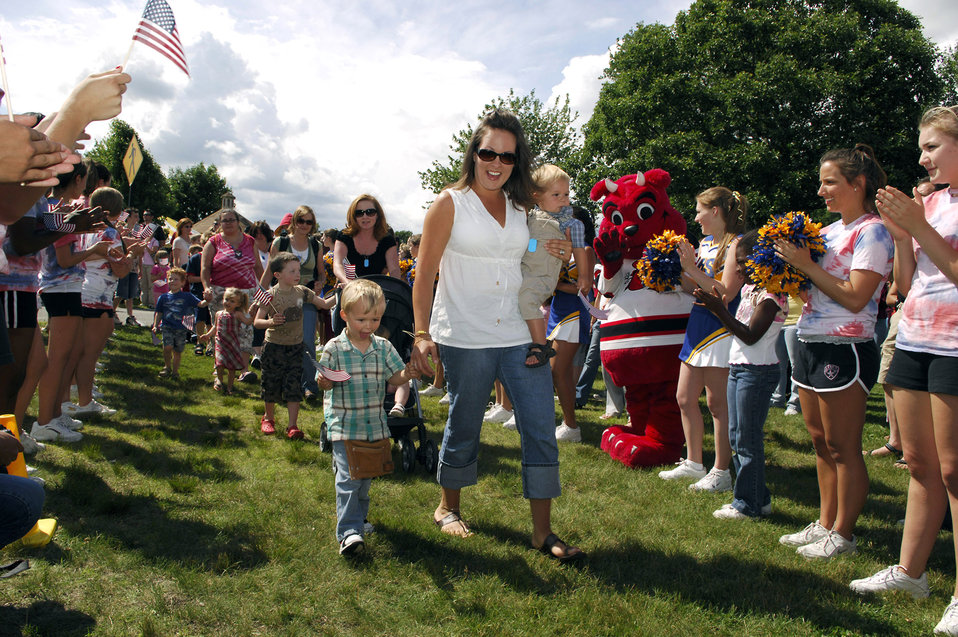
Hanscom Airmen receive heroes' welcome

Families of Airmen who recently deployed marched into a cheering crowd waving American flags during Heroes' Homecoming June 22 at Hanscom Air Force Base, Mass. During the celebration, the community formally welcomed home more than 60 servicemembers who had deployed within the last six months. Hundreds of base members, family and friends gathered during the ceremony.